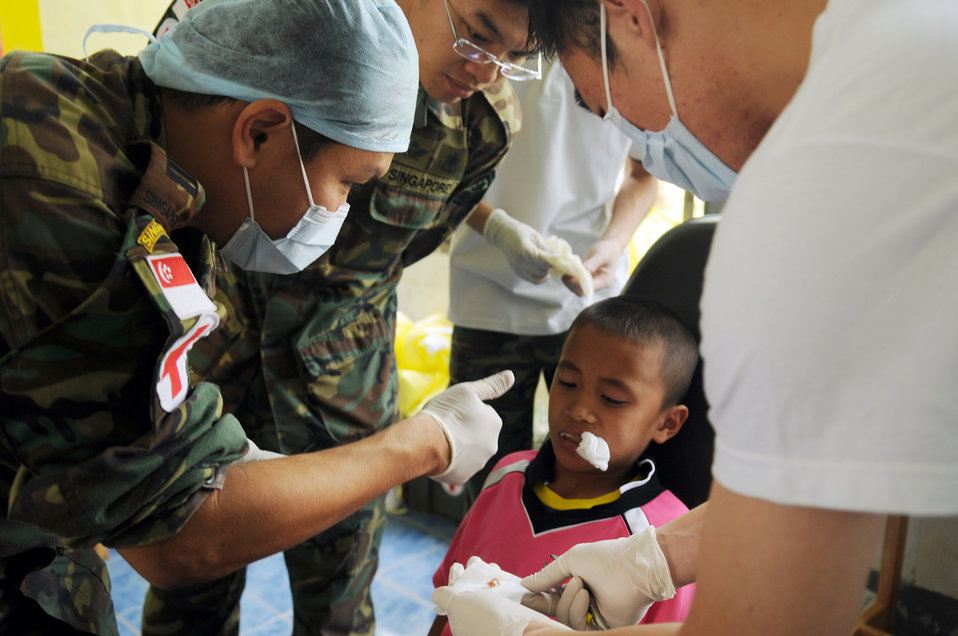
PACAF provides much needed dental and ophthalmologic care to underprivileged in Thailand.

A team of Singaporean Dentists give a thumbs-up after performing a tooth extraction during a joint and multinational humanitarian mission to provide much needed dental care to Thailand's underprivileged during Cope Tiger 2009 on March 16. Cope Tiger is an annual exercise held in Thailand to improve combat readiness and combined and joint interoperability of U.S., Thai and Singaporean forces while enhancing regional security and providing humanitarian support.